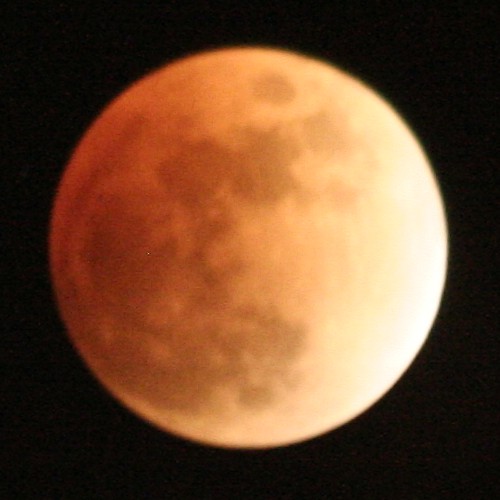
February 2008 Lunar Eclipse